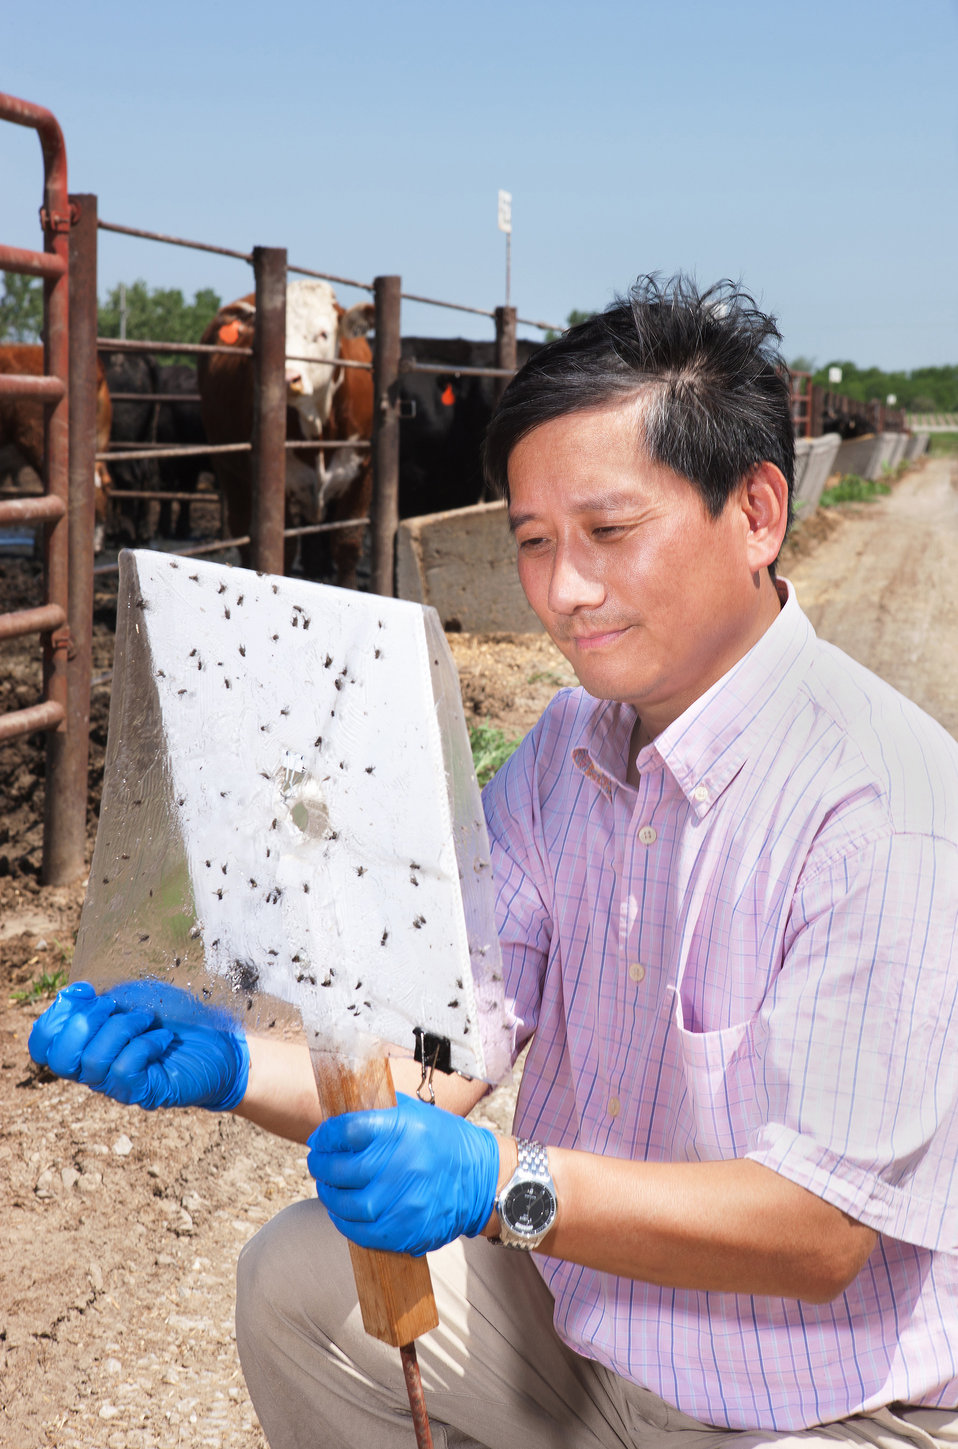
U.S. Department of Agriculture (USDA) Agricultural Research Service (ARS) entomologist Jerry Zhu checks stable fly captures from a trap baited with his newly designed attractant, or lure, in a cattle feedlot at the research farm at the University of Nebraska, Lincoln, NE on Oct. 31, 2003.